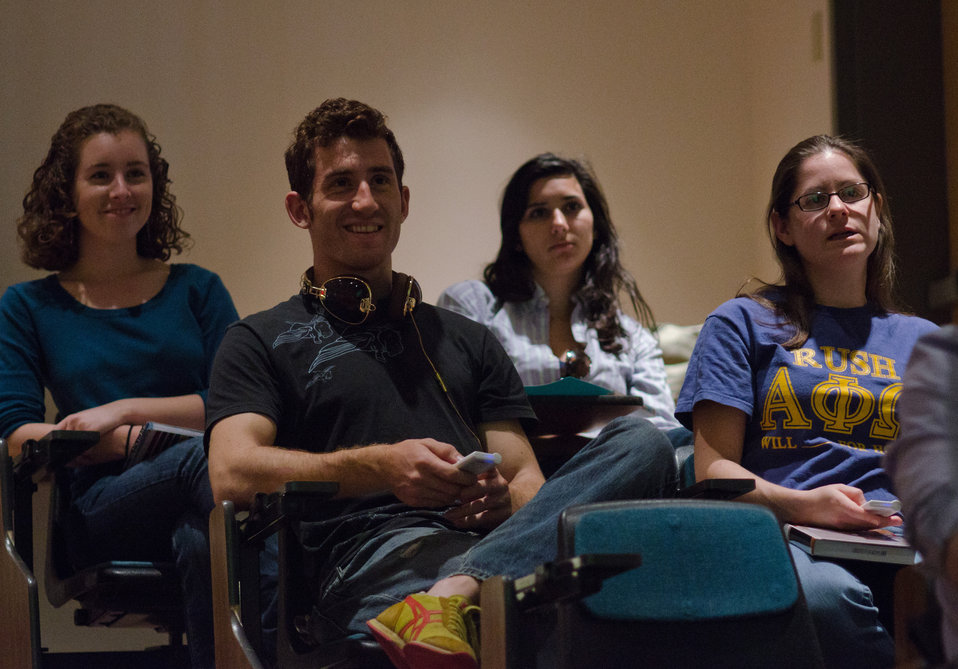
University of Maryland students in the audience used wireless polling devices during U.S. Department of Agriculture (USDA) Deputy Secretary Kathleen Merrigan presentation of the “Know your Farmer Know your Food” initiative to students and faculty at the Animal Sciences / Agricultural Engineering Building at the University of Maryland, in College Park, MD, on Thursday, April 7, 2011. Deputy Secretary Merrigan’s interactive presentation utilized wireless polling in the lecture room to present questions to the audience who used handheld devices to choose from a list of multiple answers. Their answers were instantly tabulated, then Merrigan revealed their top choice on the screen, followed by the correct answer, usually revealing an error and misconceptions. Her talk covered support of local farmers; strengthening rural communities, promoting healthy eating, protecting natural resources; grants, loans and other support USDA provides as well as stories of innovation; industry and government cooperation; and careers opportunities in agriculture, ranching and the USDA.